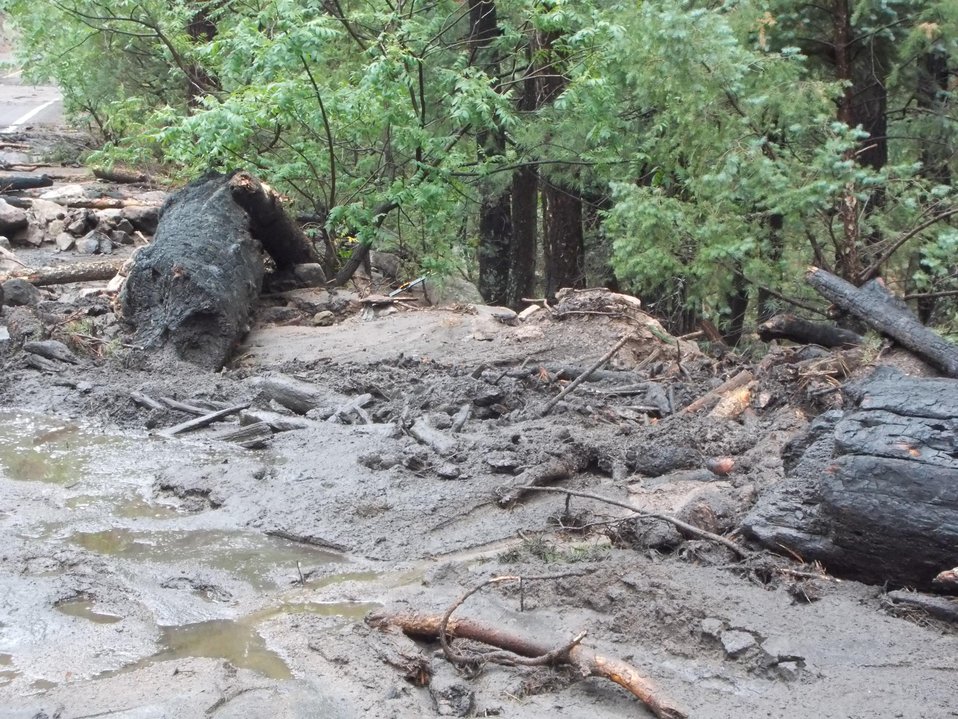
Debris is brought down to NM Hwy 152 after a thunderstorm due to the Silver Fire near Kingston, NM. The Silver Fire in Gila National Forest near Kingston, NM burned an estimated 138,705 acres.